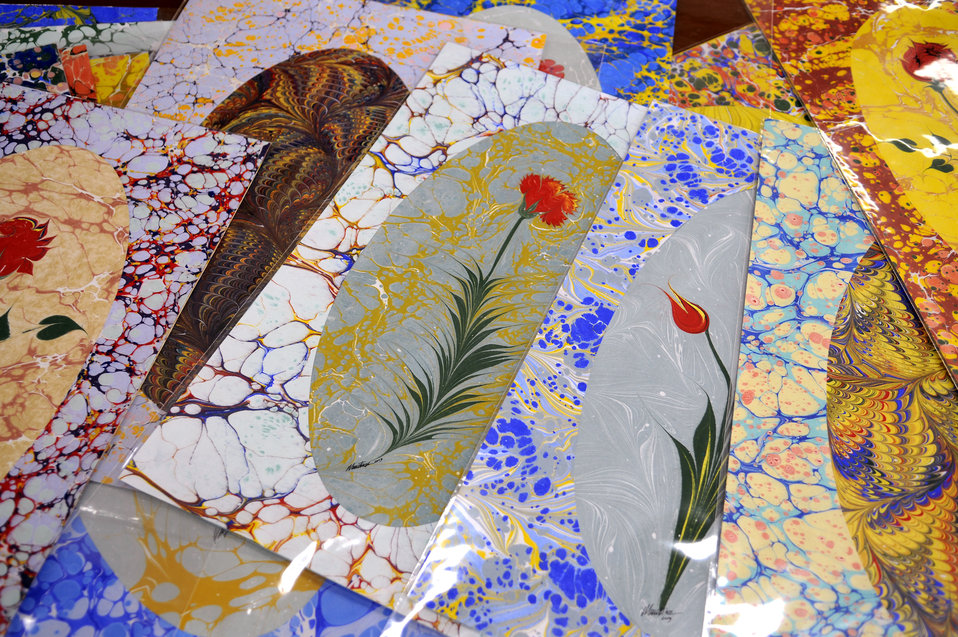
Learning Turkish art

Ebru art, created by Mesut Dikel, is displayed during a class June 24 at the Arts and Crafts Center at Incirlik Air Base, Turkey. Ebru, or paper marbling, has been practiced in Turkey since the 15th century and uses all-natural products from the brushes to the paints.